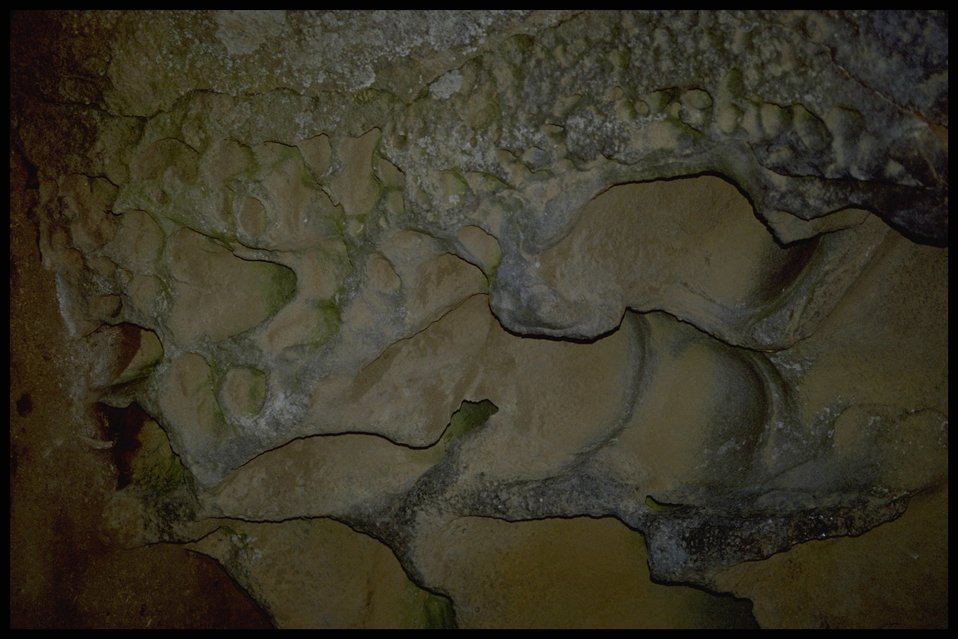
Close shot of rock from "Crack in the Ground", Lakeview District.